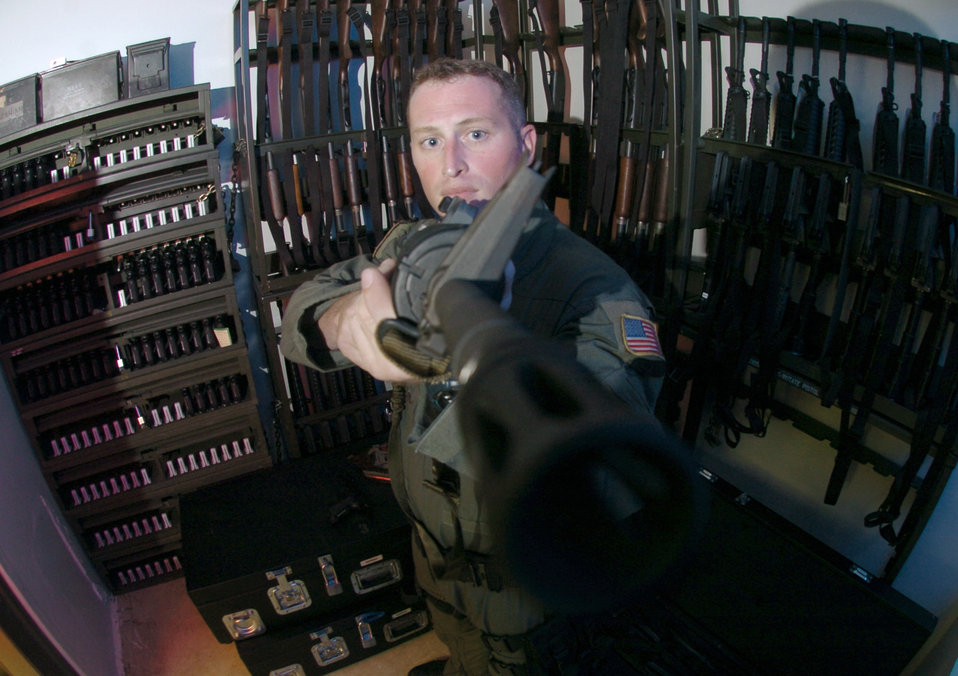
Function over form

KADENA AIR BASE, Japan -- Staff Sgt. J.D. Williams performs a function check on a GAU-5 rifle here. Sergeant Williams is the weapons custodian and an MC-130H Combat Talon II loadmaster with the 1st Special Operations Squadron here. He maintains all the firearms for 1st SOS aircrews.